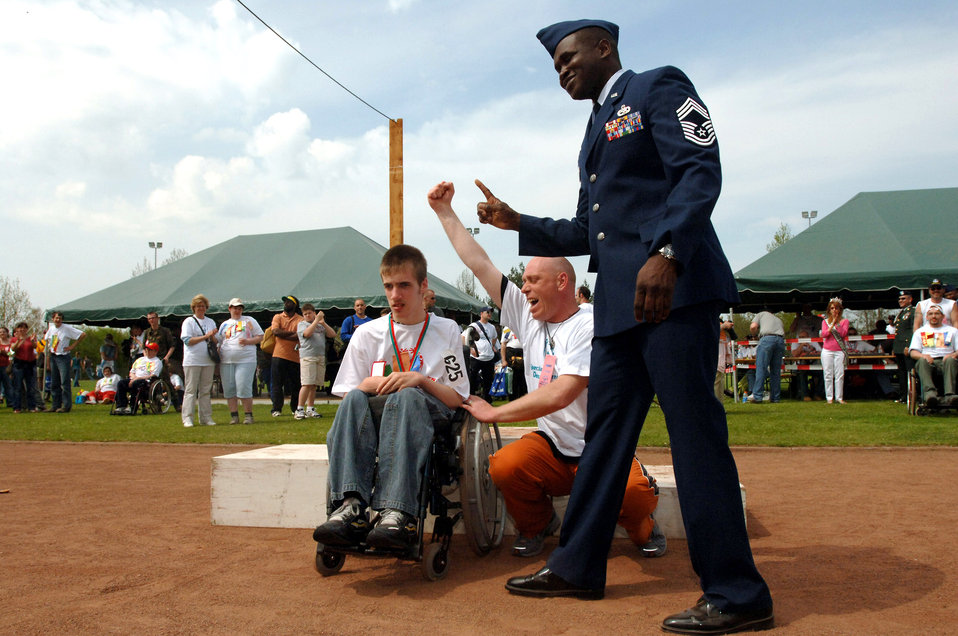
Volunteer spirit at Special Olympics

Chief Master Sgt. Reginald Glover helps celebrate during the medal presentations at the 29th Special Olympics at Enkenbach-Alsenborn, Germany, on Wednesday, May 3, 2006. Chief Glover is with the 86th Maintenace Group at Ramstein Air Base, Germany. He said that